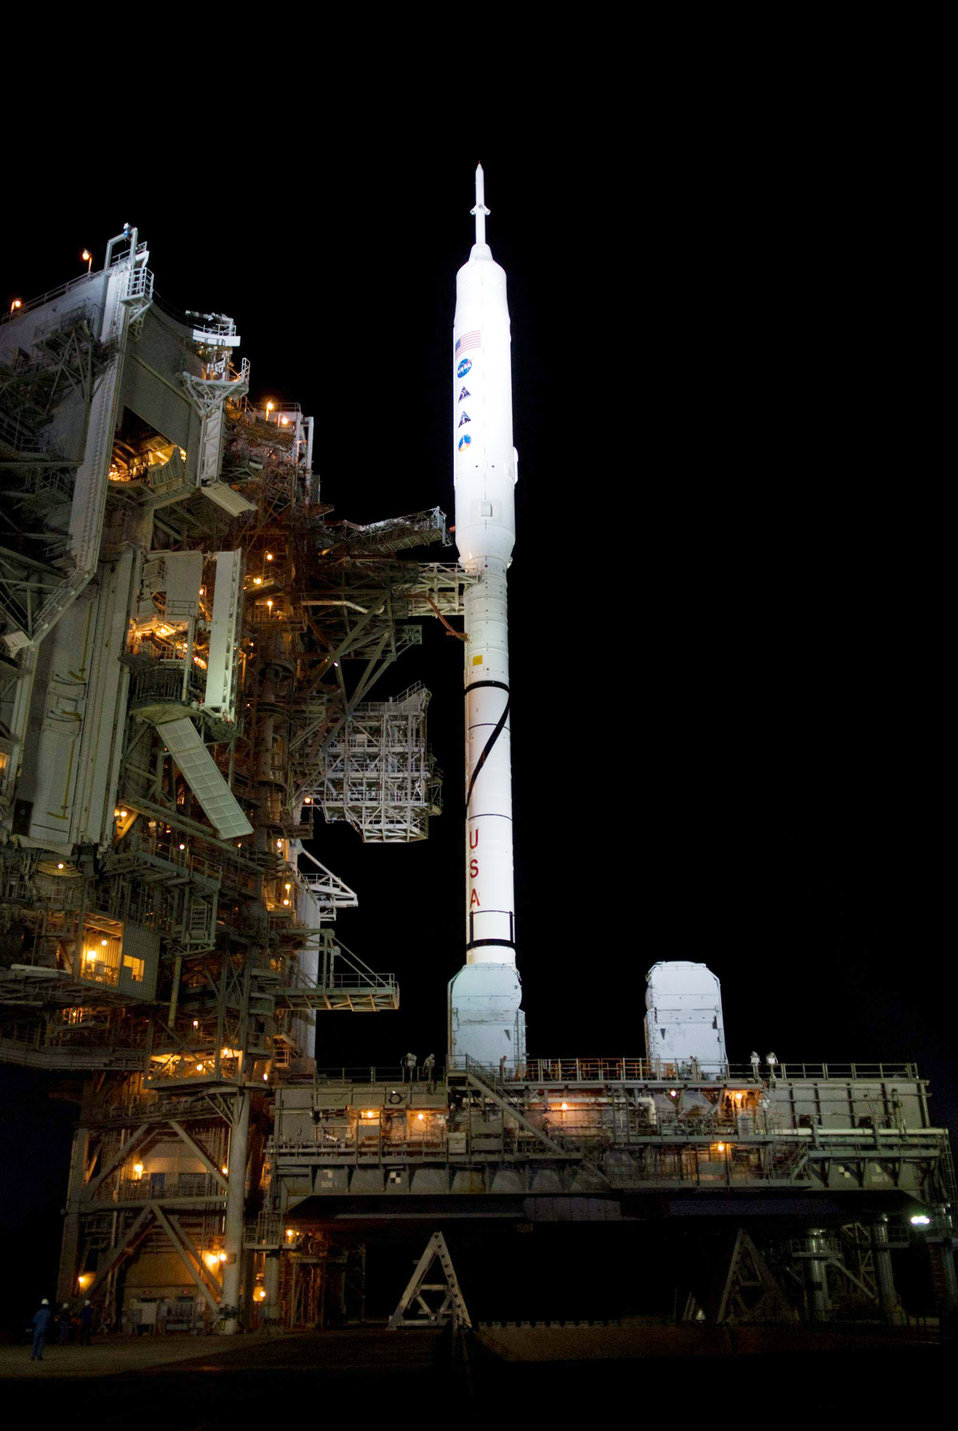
Preparing for launch

An Ares I-X rocket waits for the approaching liftoff of its flight test on Launch Complex 39B at NASA's Kennedy Space Center, Fla., Oct. 27, 2009. This is the first time since Saturn rockets were retired that a vehicle other than a space shuttle has occupied the pad. The rocket launched Oct. 28, 2009.